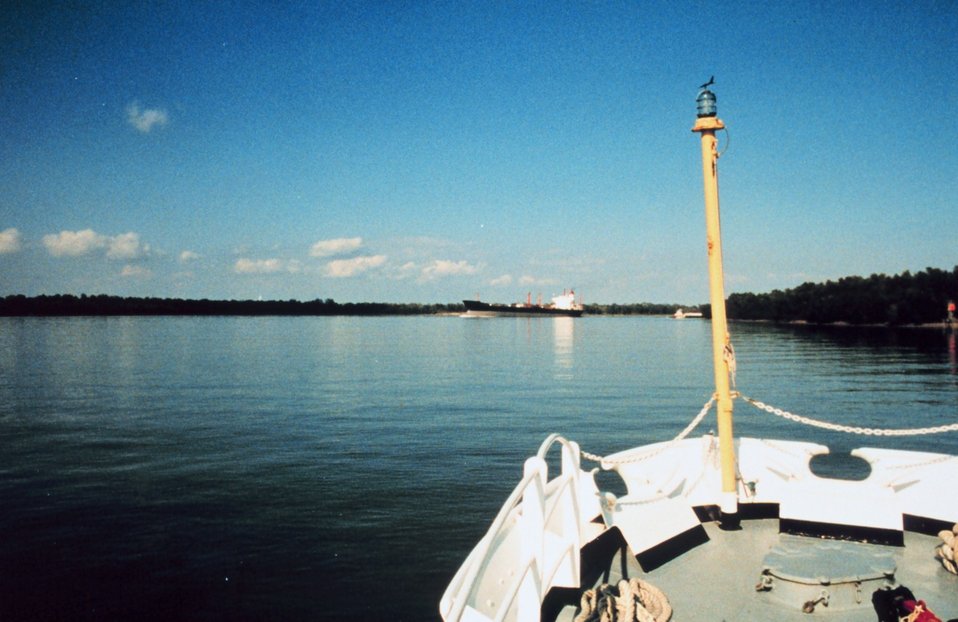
Heading up the Mississippi River to New Orleans